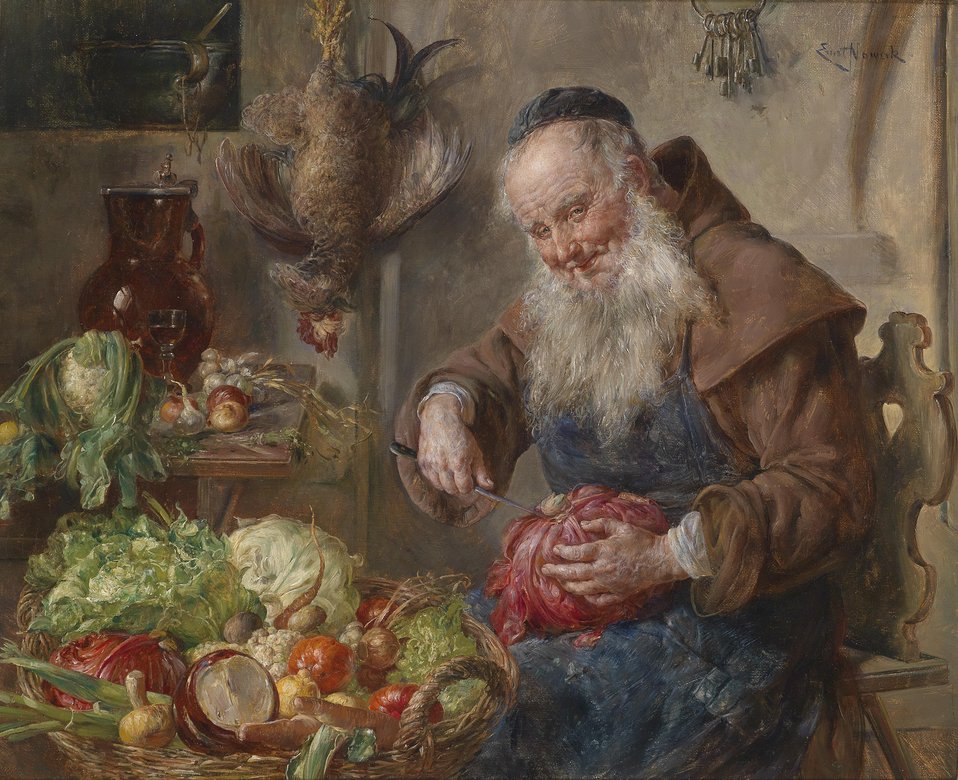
Ernst Nowak Mönch in der Küche